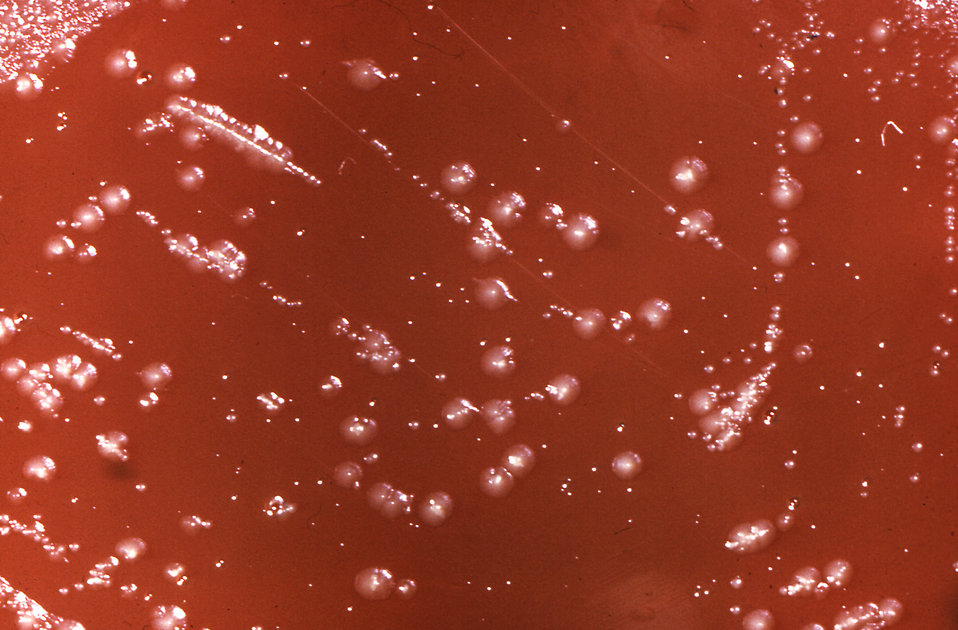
This culture dish grew E. coli, F. mortiferum, P. vulgaris, and C. perfringens bacterial colonies.